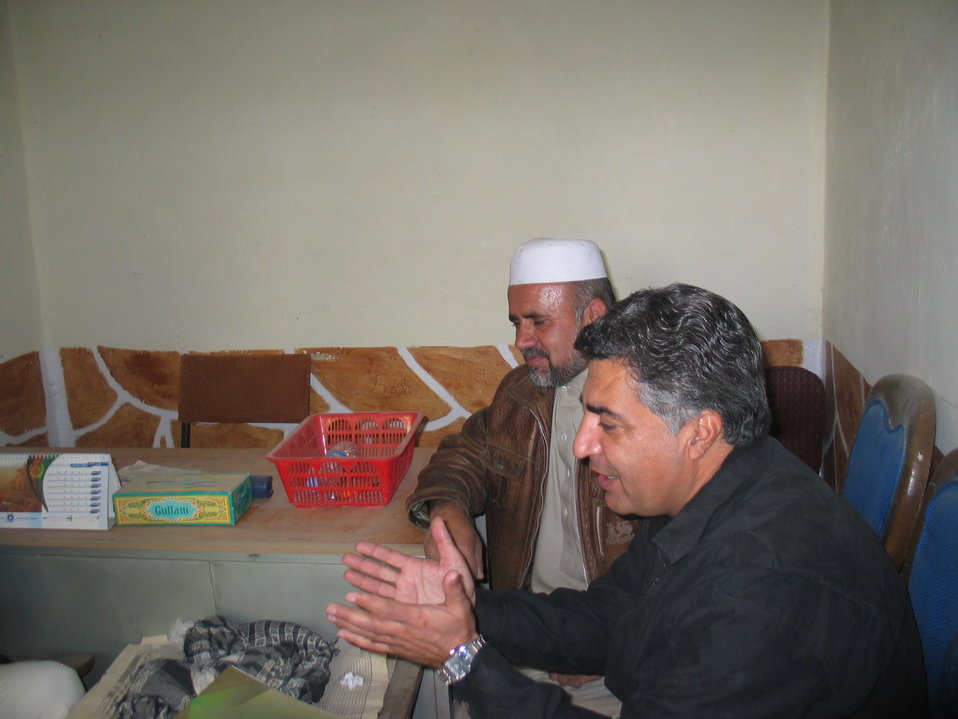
Kabul River Bridge Renovation, December 3, 2010